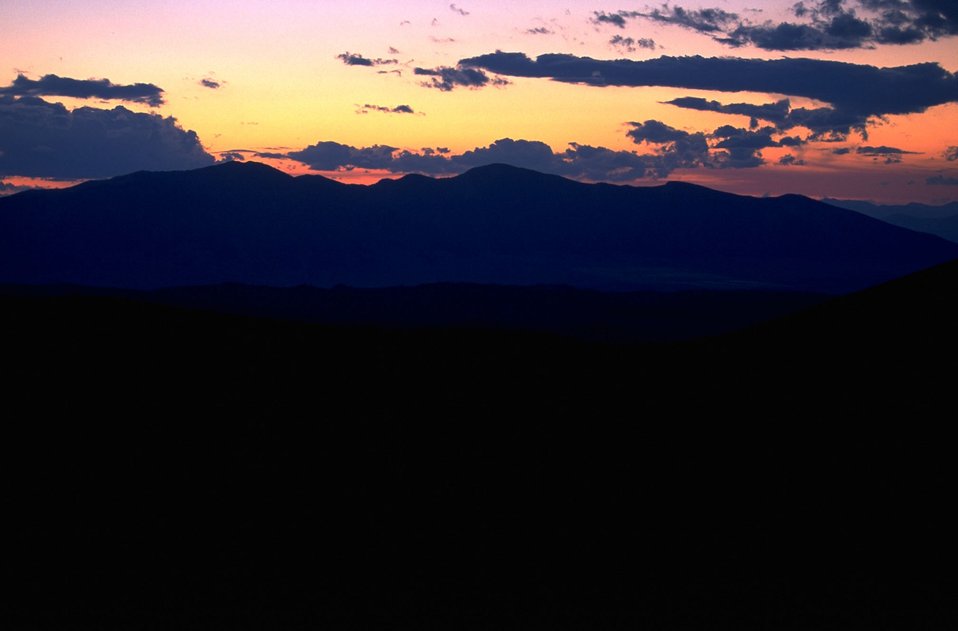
Sunset